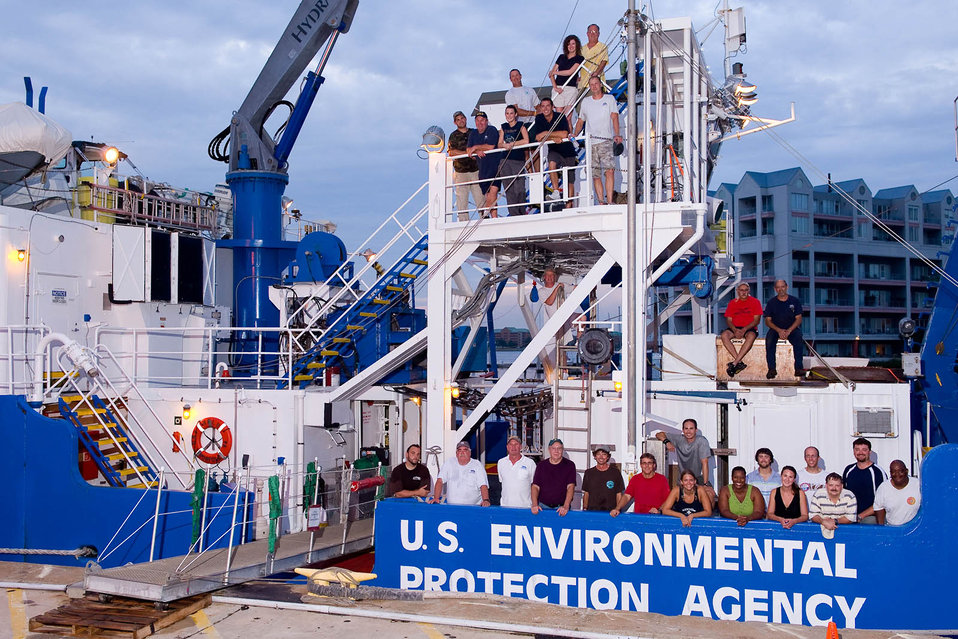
Crew of the OSV Bold